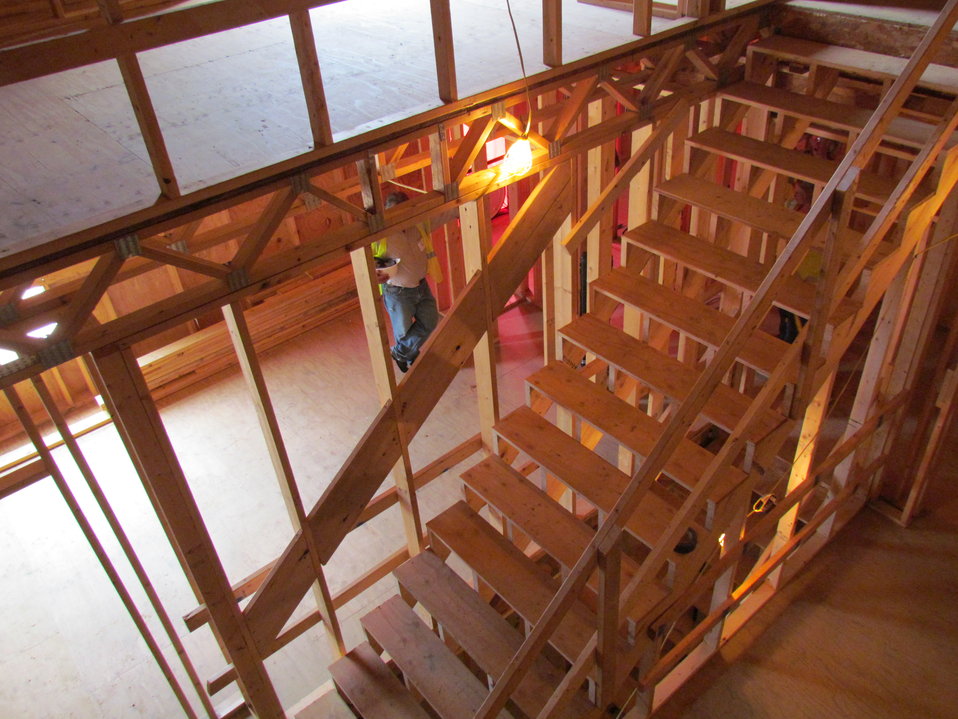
Net-Zero Energy Residential Test Facility - Interior photo taken from second floor of facility.